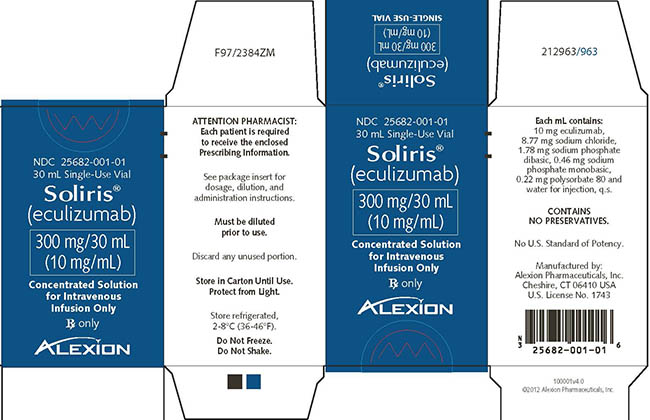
RECALLED – Soliris (eculizumab)

June 2, 2014 – Product Recall – Alexion Initiates Voluntary Nationwide Recall of Certain Lots of Soliris® (eculizumab) Concentrated Solution for Intravenous Infusion Due to the Presence of Visible Particulate Matter in a Single Lot.